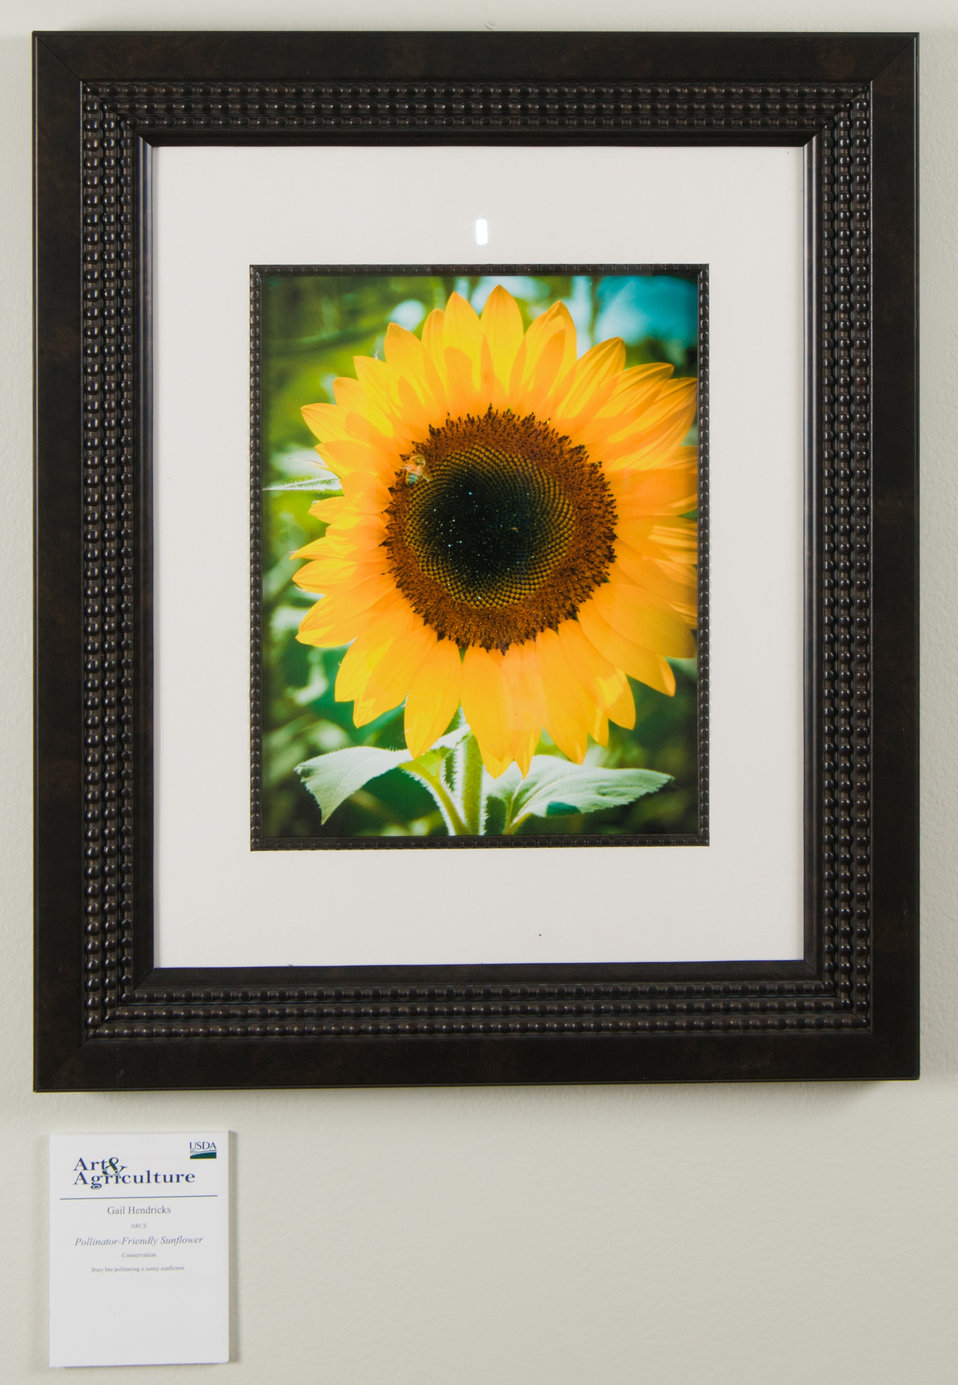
Online Viewer's Choice entries of the 2013 Art & Agriculture, Tuesday, July 9, 2013, in the South Building, Washington, D.C. Themes were expressed by employees from across the department and the contest was open to full-time and part-time USDA employees. Winning artwork will be displayed till the end of the year. U.S. Artistic expression is a creative outlet that is vital for an individual to grow and develop.